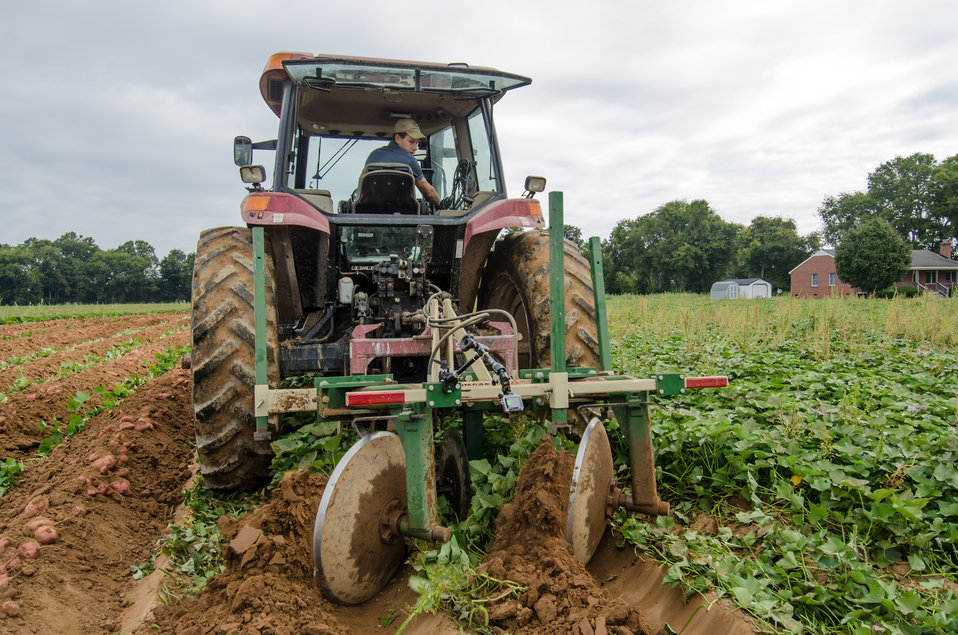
Kevin Kirby uses a tractor to begin the sweet potato harvest process by plowing them up from the field on Kirby Farms in Mechanicsville, VA on Sep. 20, 2013. Kirby Farms is a third-generation family farm that covers 500 acres, and generates produce and grains on a year-around operation. Please see the photoset description for more information about this farm operation.